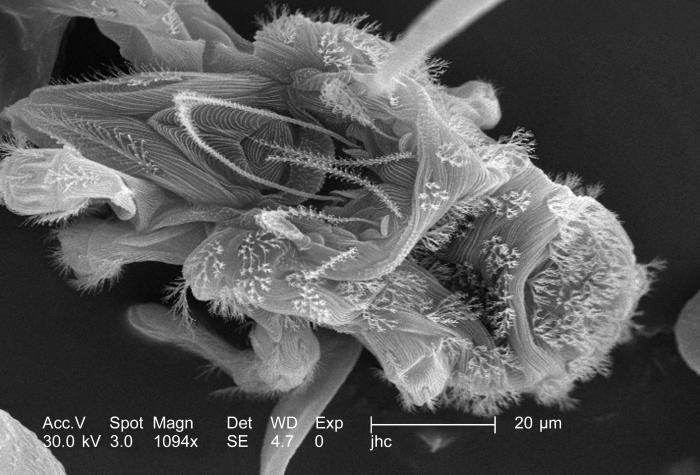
Under a moderately high magnification of 1094x, this scanning electron micrograph (SEM) revealed the presence of numbers of mites from the specie Nanorchestes sp., Family Nanorchestidae, which were highly festooned with an adornment of chitinous exoskeletal outcroppings. Under higher magnifications, i.e., PHIL 8808, 8809, these exoskeletal complexities were better appreciated in their diaphanous majesty.